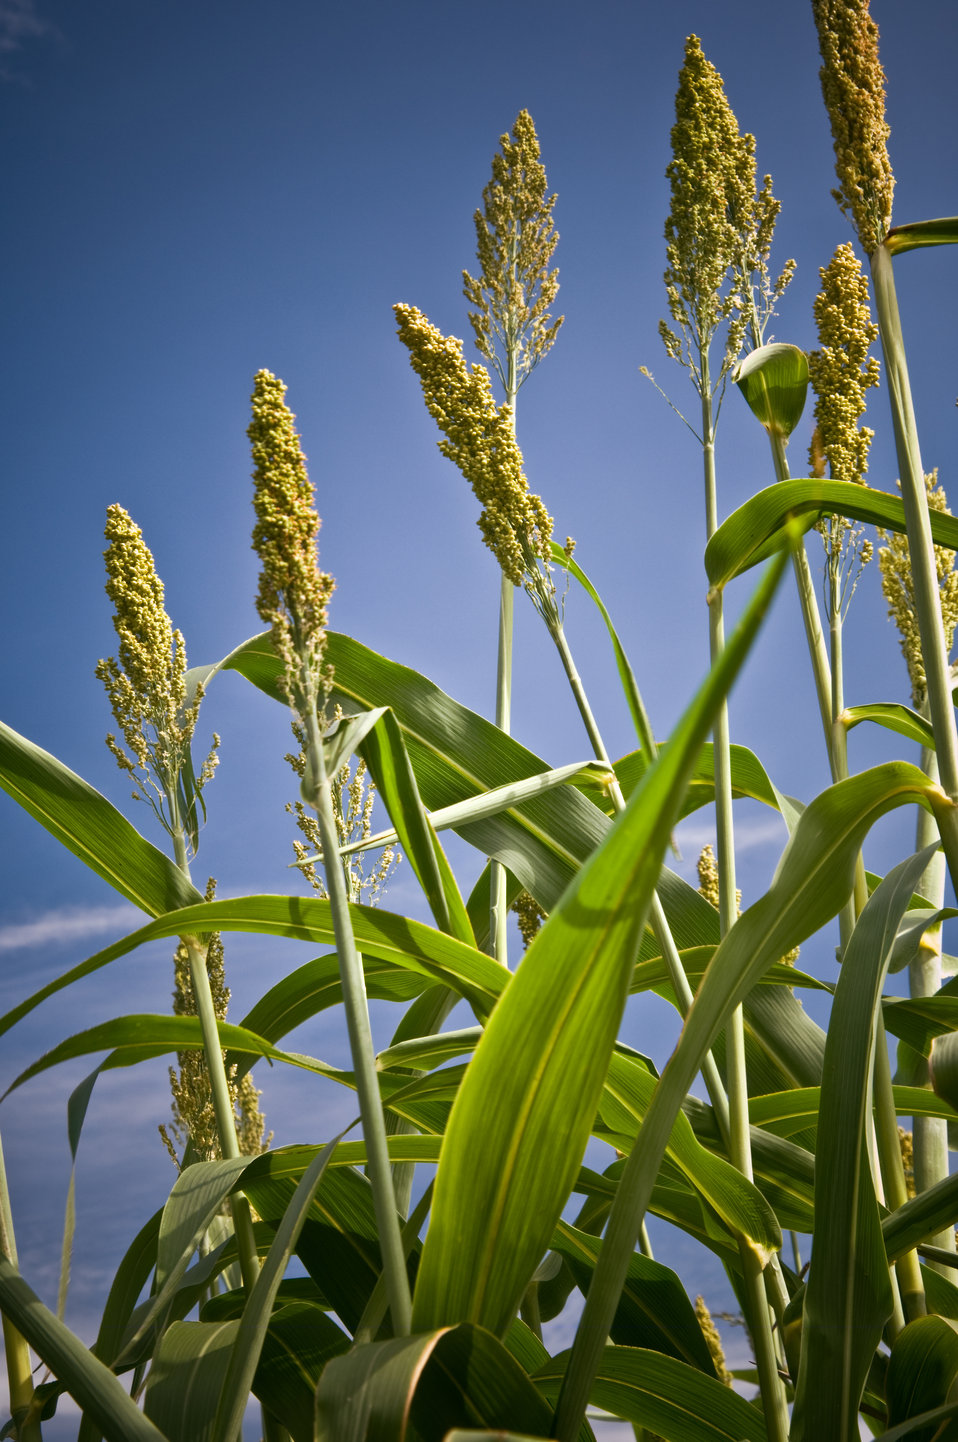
The Power Plant garden at the National Arboretum in Washington, D.C., displays a variety of plants that may provide a valuable and renewable source of bioenergy for America. Bioenergy is a renewable energy made available from materials derived from biological sources. Sorghum is a grain native to northeastern Africa, topical Africa and southern Africa. Sorghum grows in environments too harsh for corn or sugarcane and could be an alternative crop for sugar and grain ethanol production. Texas A & M University System is trying to develop a variety of sorghum that could also be used in the production of cellulosic ethanol. This photograph shows sorghum growing in the Power Plant garden at the National Arboretum in Washington, D.C. on August 19, 2008.